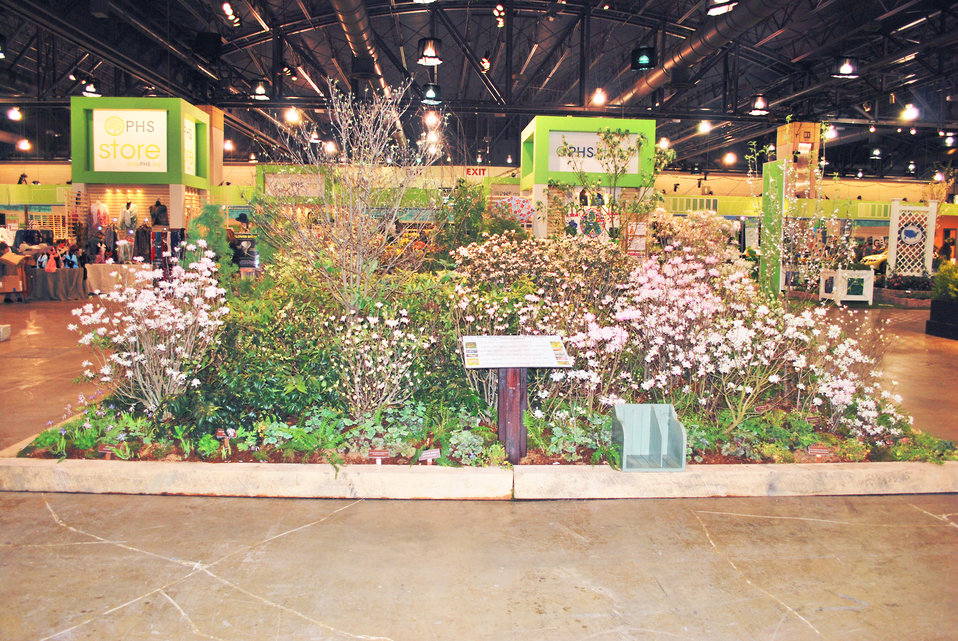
EPA's display at the Philadelphia Flower Show, 2014

A side view of our display at the 2014 Philadelphia Flower Show. Included were a variety of plants showing the brilliance and beauty of natural landscaping.